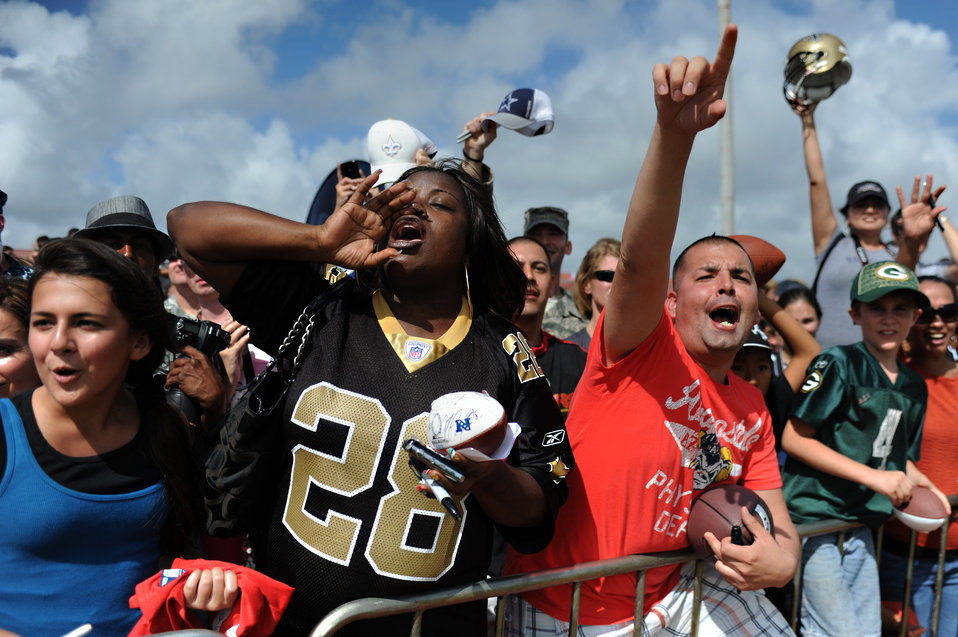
Cheering section

Football fans yell for their favorite players to come over and sign an autograph during the Pro Bowl practice at Earhart Field on Joint Base Pearl Harbor-Hickam, Hawaii, Jan. 26, 2012. Hundreds of service members lined the field for a chance to meet the professional athletes and get an autograph.